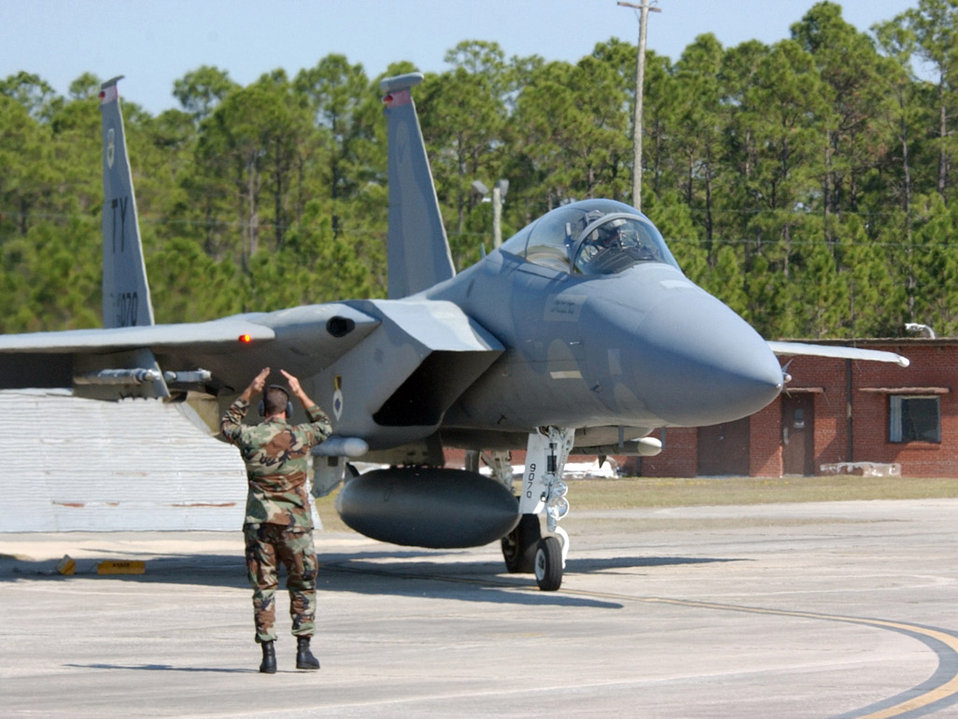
War Day

TYNDALL AIR FORCE BASE, Fla. (AFPN) -- A crew chief marshals out Capt. Eric Haas during a War Day alert scramble. After the alert horn sounded, Captain Haas ran to his F-15 Eagle and was ready for takeoff in 3 minutes, 15 seconds.